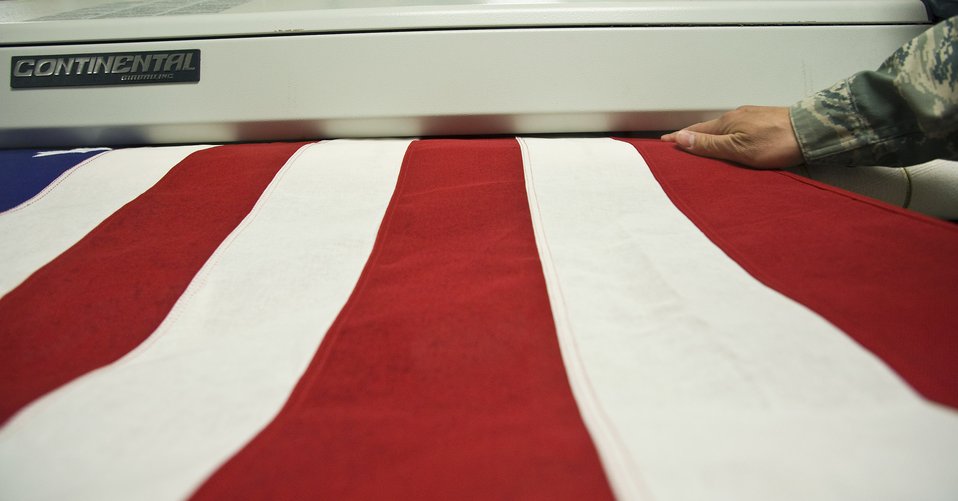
Dignified Transfer of Remains

Tech. Sgt. Willard Rico feeds a U.S. flag into a pressing machine March 31 at the Charles C. Carson Center for Mortuary Affairs, Dover Air Force Base, Del. The press irons the flags wrinkle free that will be placed over caskets during the dignified transfer of remains. The center is the Defense Department's largest joint-service mortuary facility, and the only one in the continental United States. Sergeant Rico is deployed from the 60th Force Support Squadron, Travis AFB, Calif.